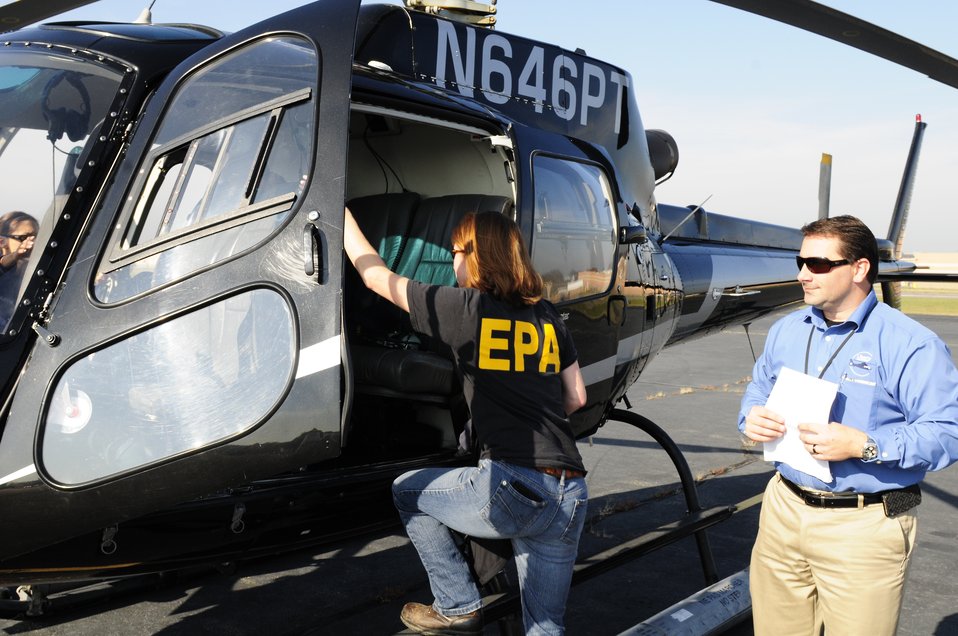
November 11, 2012 Preparing for Hudson River Flyover

EPA accompanied the US Coast Guard on an over flight of the Hudson River to determine locations for displaced fuel tanks and other hazardous debris.